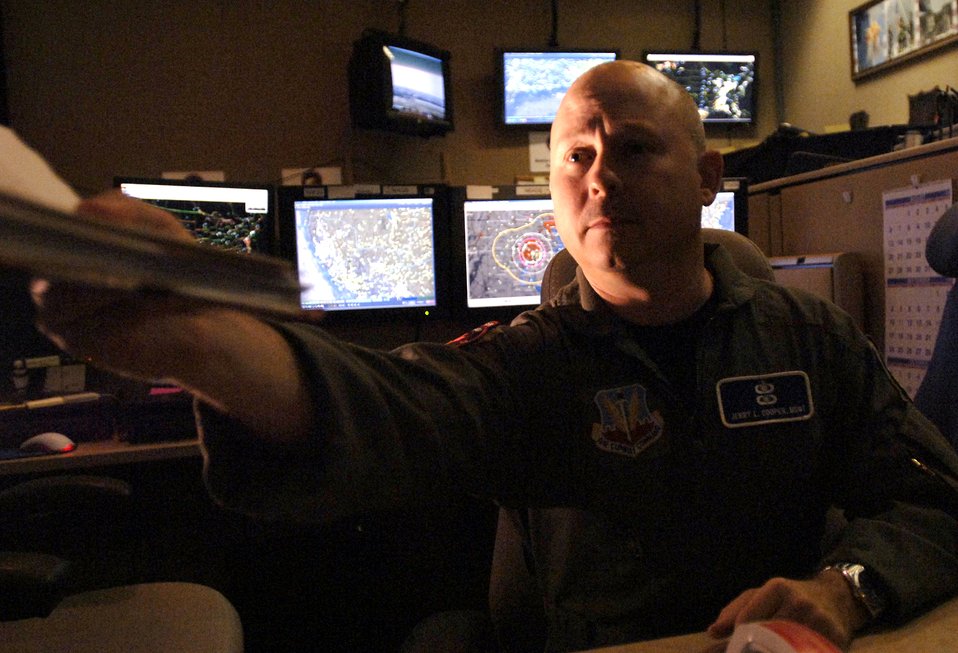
Business changes dramatically for air operations center

Master Sgt. Jerry Cooper passes documents to a co-worker after completing his shift at the Air Operations Center at Tyndall Air Force Base, Fla., Sept. 12. Sergeant Cooper, an assistant crew chief with 1st Air Force, is responsible for monitoring unknown aircraft within U.S. air space.